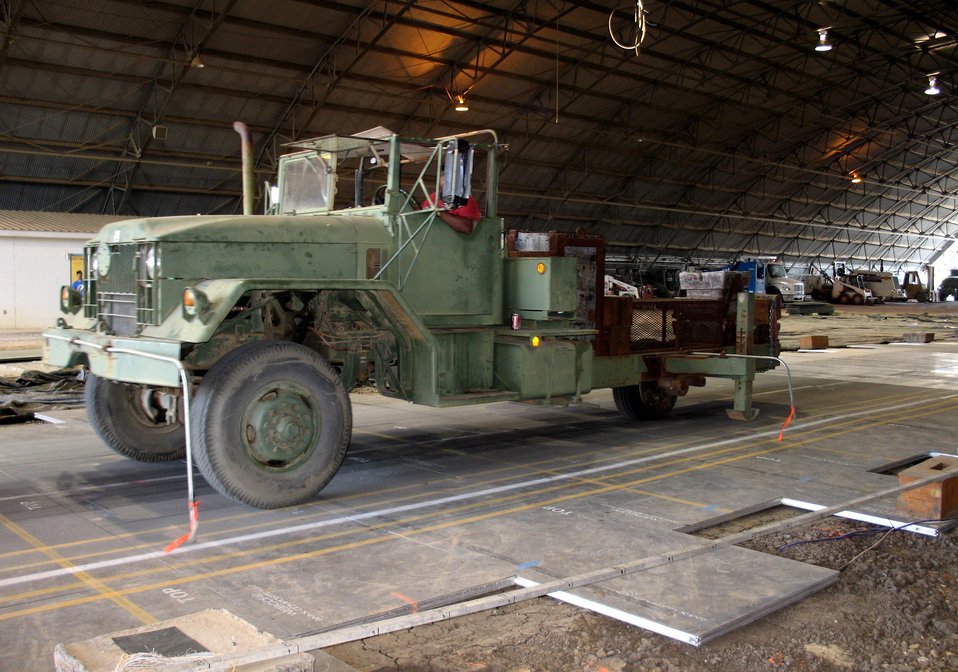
New matting system to improve deployment capability

A vehicle tests lightweight composite airfield matting that speeds up forward aircraft deployments, expands parking space and reduces costs. Working in partnership with the civilian industry, Air Force engineers have developed lightweight composite next generation panels to support aircraft as airfield matting at austere airfields.